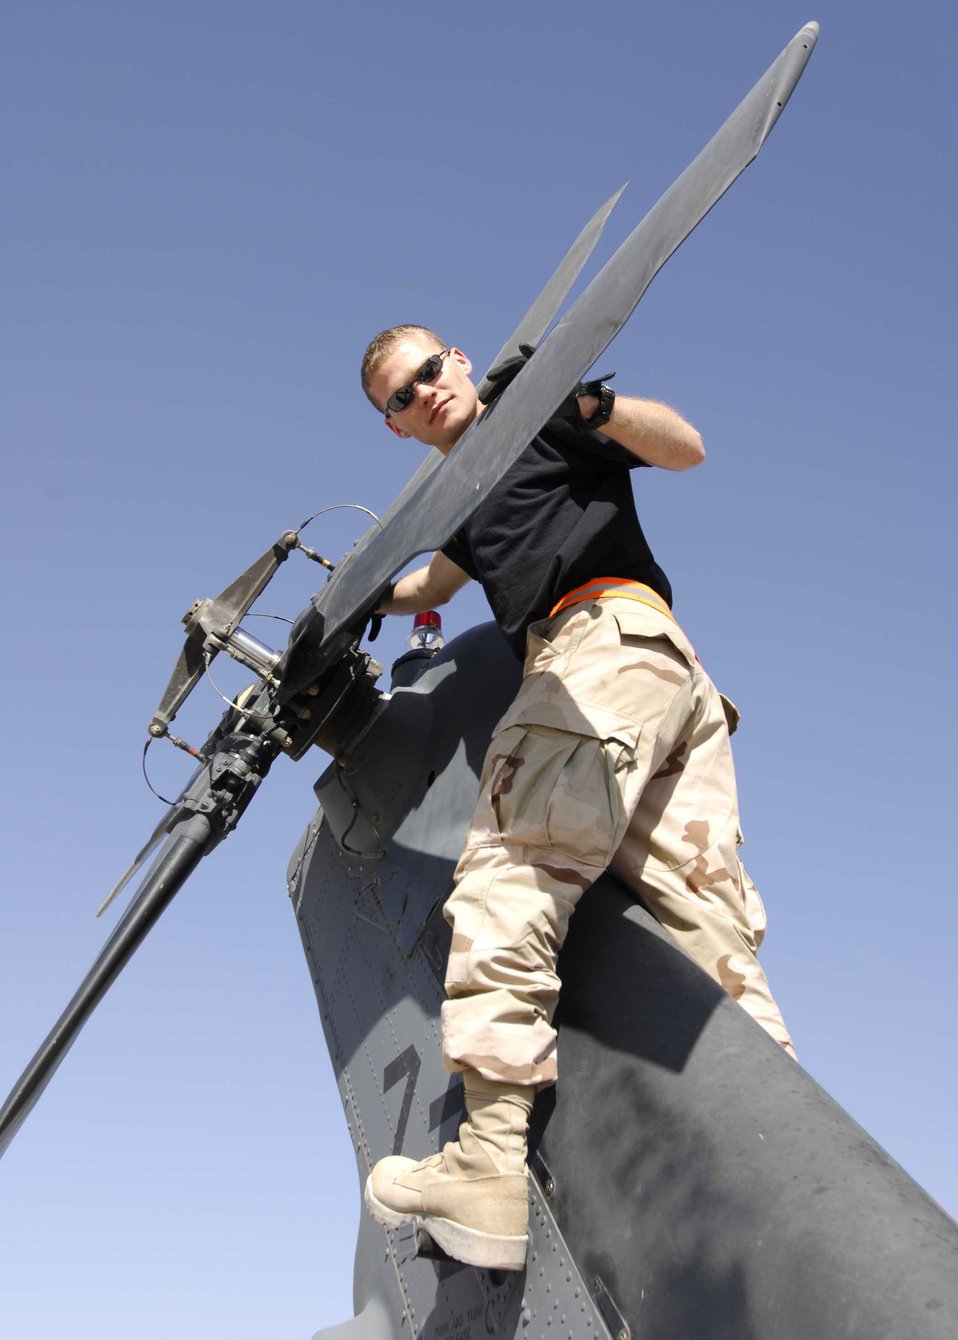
Airmen keep

Staff Sgt. Jason McDowell inspects an HH-60 Pave Hawk helicopter at Kandahar Airfield, Afghanistan, Dec. 29. Since February, 2006, HH-60, like those assigned to the 33rd ERQS, have been flying alongside Army helicopters to help provide medical evacuation throughout Afghanistan.